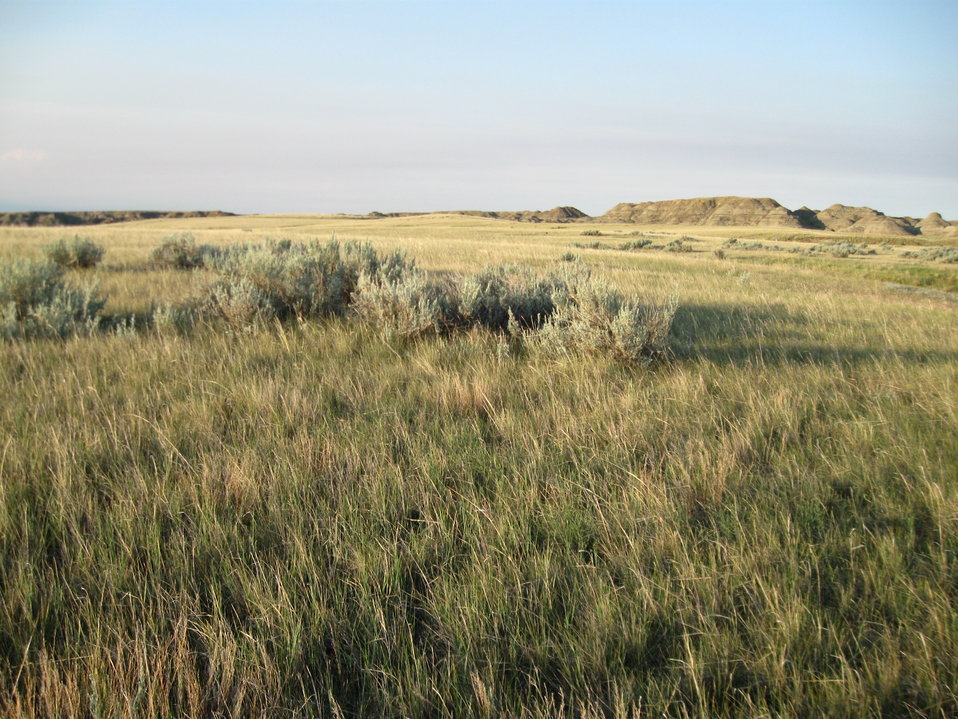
Dry Arm

A scene from the east side of CMR known as the Big Dry Arm .